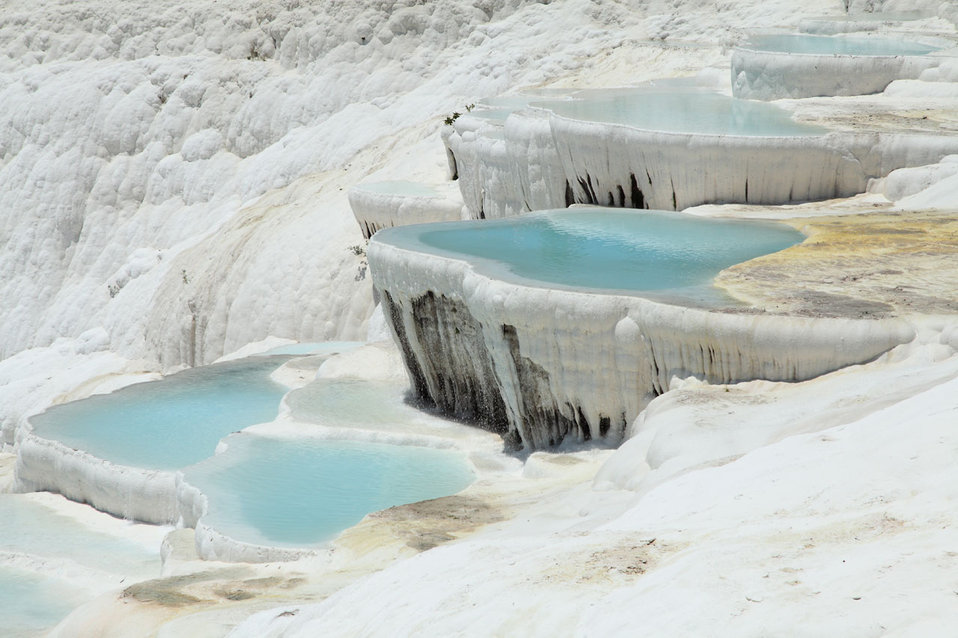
Pamukkale pools

Pools made with calcium rich water in pamukkale - turkey.